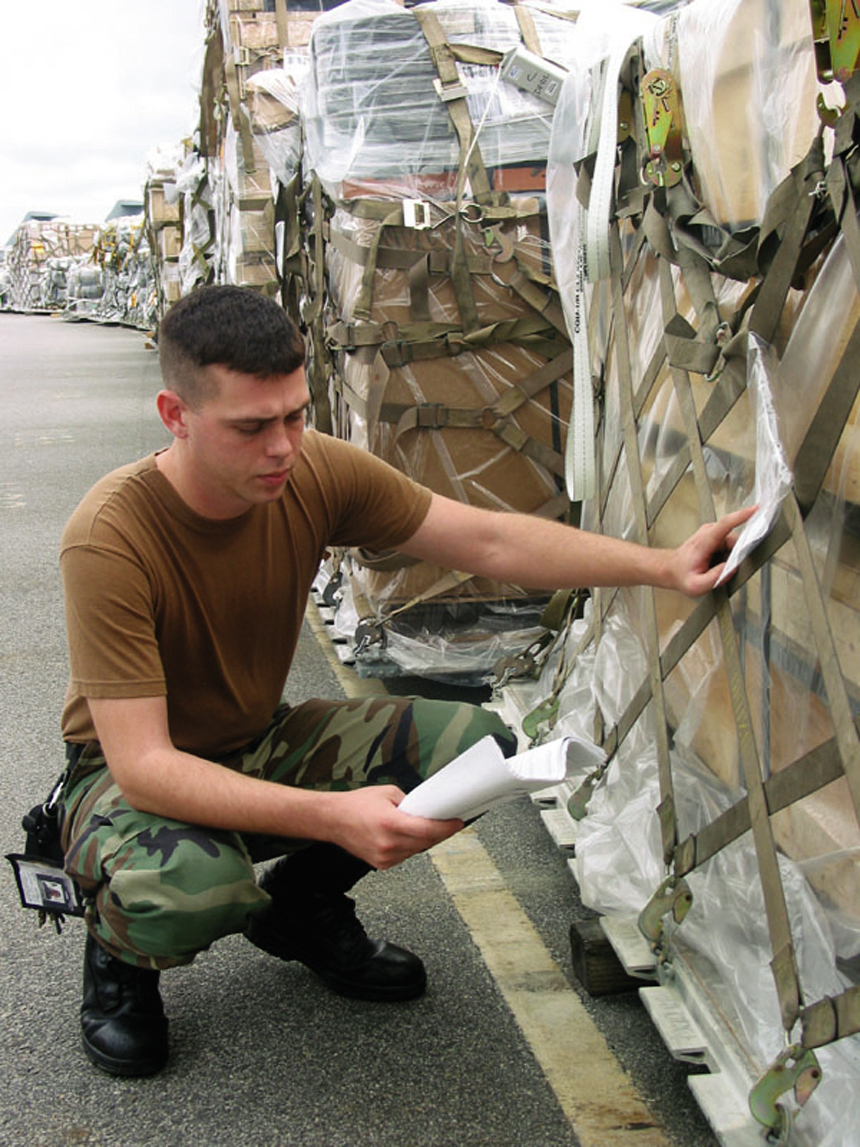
Airmen move crucial cargo for warfighters

CHARLESTON AIR FORCE BASE, S.C. -- Airman Michael Mitchem checks a cargo list to ensure equipment is delivered to the appropriate aircraft. This pallet, bound for Iraq, contains an armor kits for military trucks. Airman Mitchem is a 437th Aerial Port Squadron air transportation apprentice.